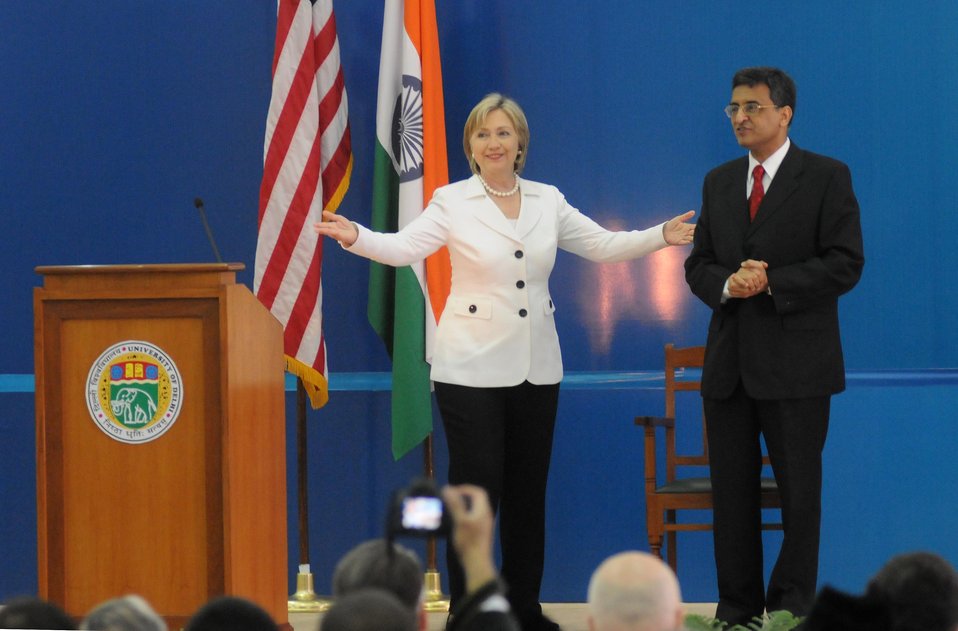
Secretary Clinton Speaks at University of Delhi

U.S. Secretary of State Hillary Rodham Clinton speaks at the University of Delhi in New Delhi, India July 19, 2009.